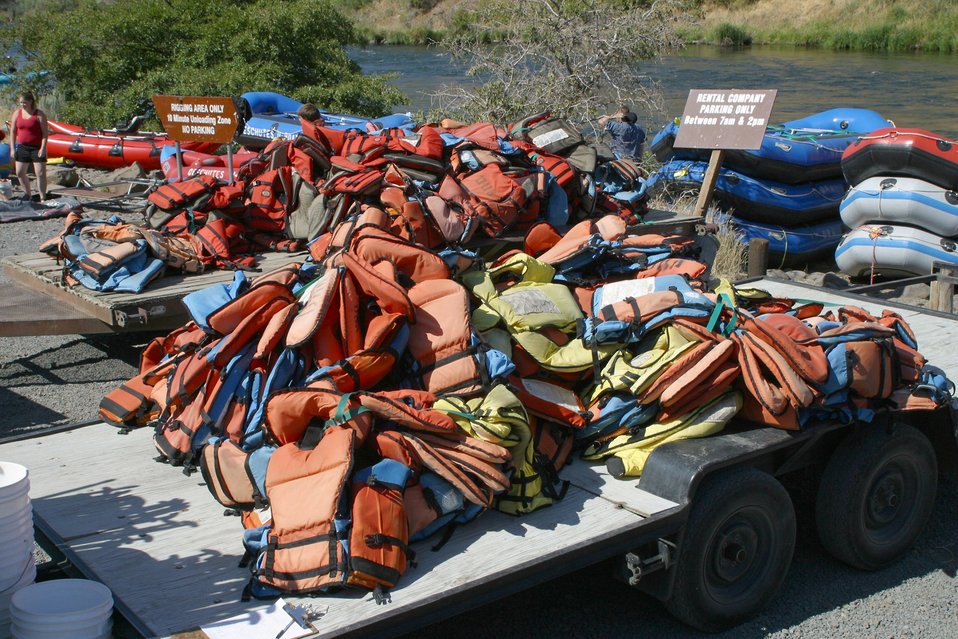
Commerical outfitters provide the necessary safety equipment.